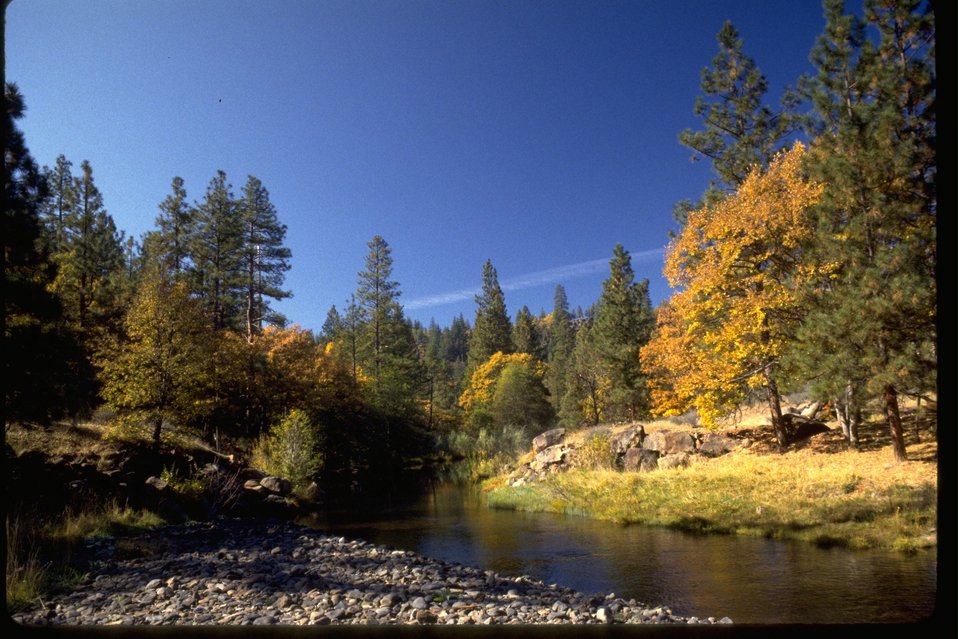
Schoheim at Jenny Creek crossing.